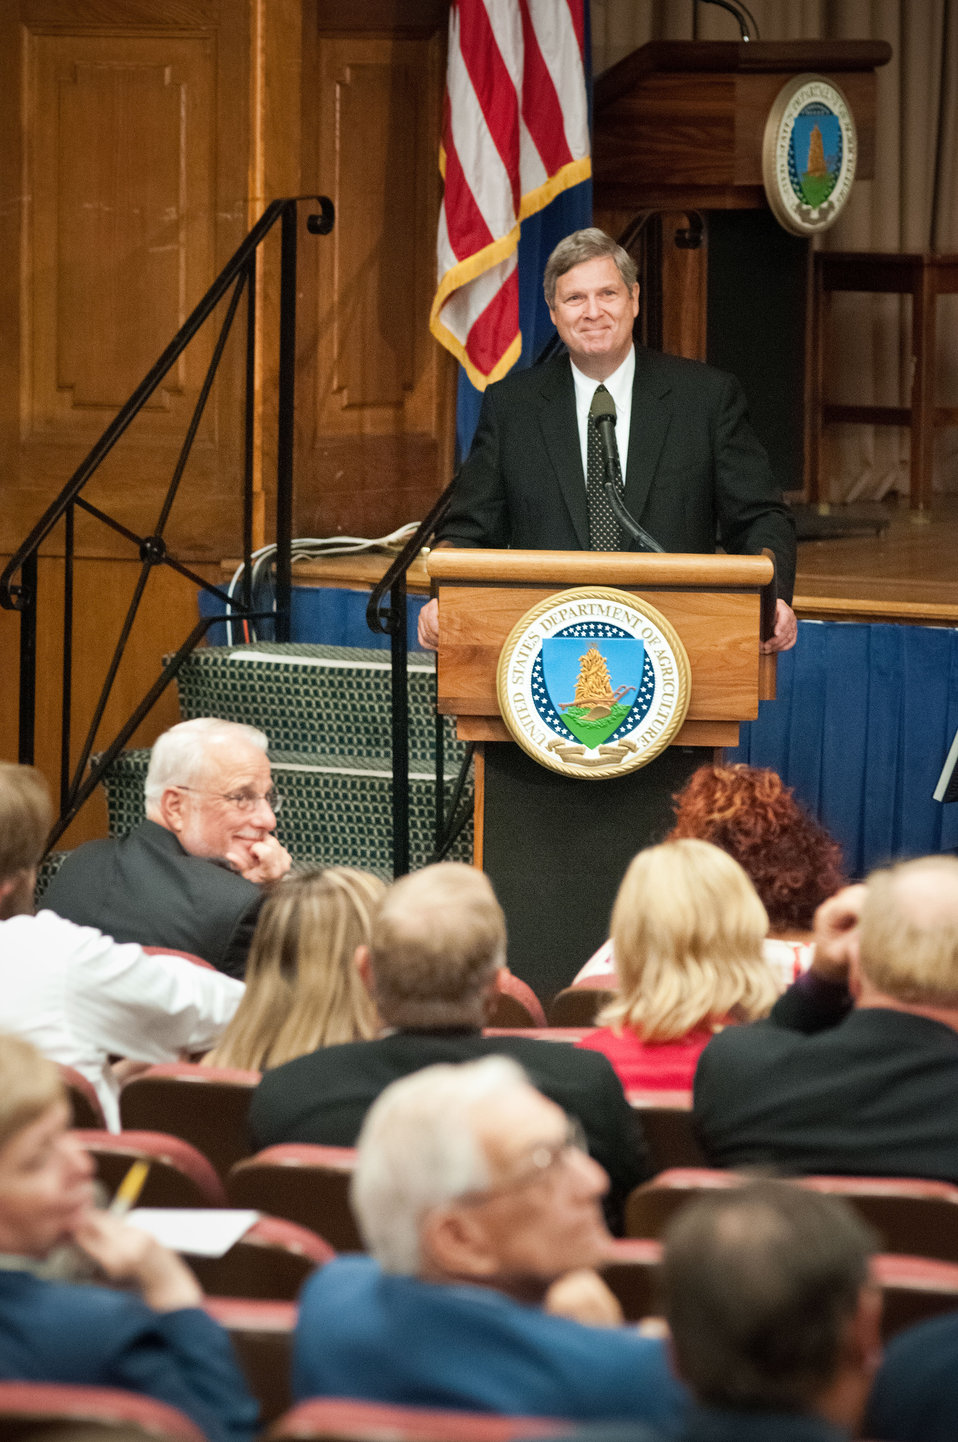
Agriculture Secretary Tom Vilsack listens to questions posed by members of the National Farmers Union at the U.S. Department of Agriculture (USDA) in Washington, D.C. on Monday, Sept. 10, 2012. Secretary Vilsack discussed the economics of agriculture, conservation, exports, Rural America and the 2012 Farm Bill. Seated front row left is USDA Natural Resources Conservation Service (NRCS) Chief Dave White, who spoke later during the event.